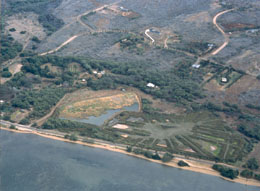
Kakahai'a NWR

The Kakahai'a NWR contains a 15-acre coastal freshwater marsh - a remnant of an ancient Hawaiian fishpond -seen in the middle of this picture.